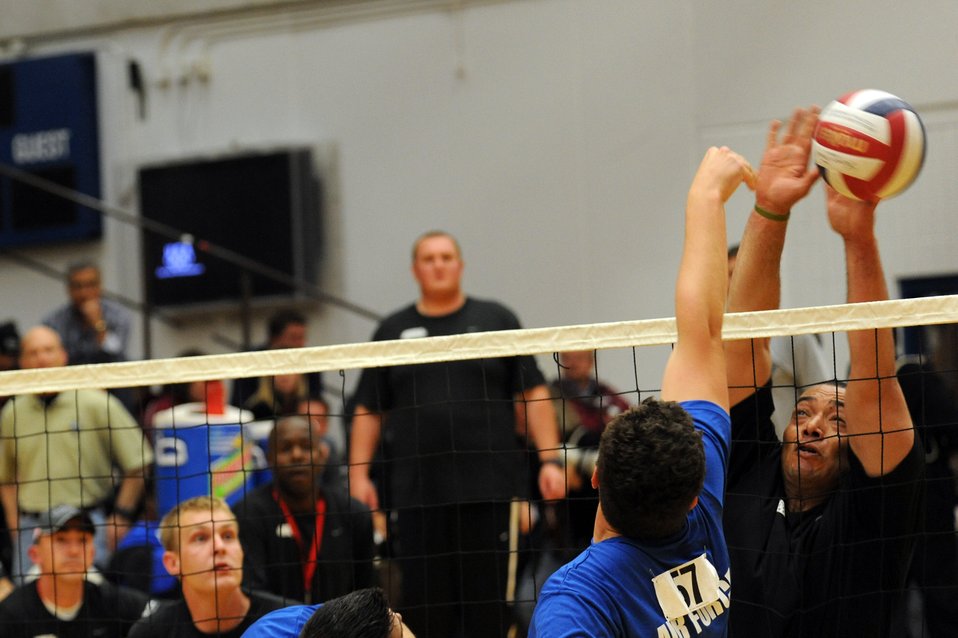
AF Volleyball wins Bronze at Warrior Games

Air Force Warrior Games athlete, 2nd Lt. Ryan McGuire, blocks the ball during the Warrior Games sitting volleyball match against Army at the U.S. Olympic Training Center in Colorado Springs, Colo., May 13, 2010.